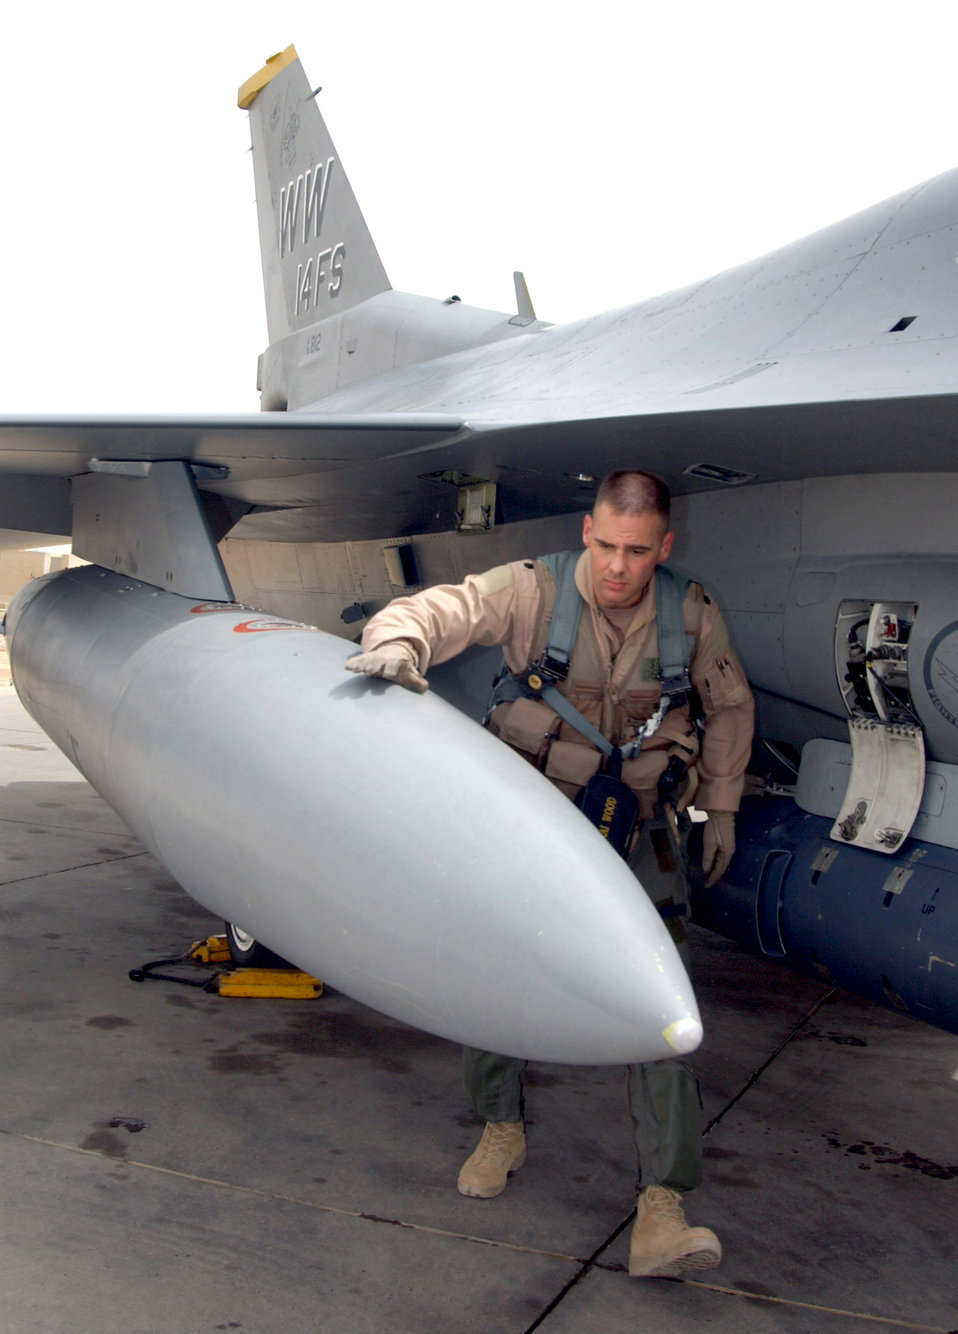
Misawa squadrons swap out Iraqi mission

Lt. Col. Steve Williams inspects his F-16 Fighting Falcon before flying his first combat mission for air expeditionary force 7 and 8 May 30 from Balad Air Base, Iraq. Colonel Williams is the 13th Expeditionary Fighter Squadron commander. More than 260 Airmen from the 13th EFS and 35th Aircraft Maintenance Squadron from Misawa Air Base, Japan, took over the close-air-support mission from their sister squadron, the 14th Expeditionary Fighter Squadron.